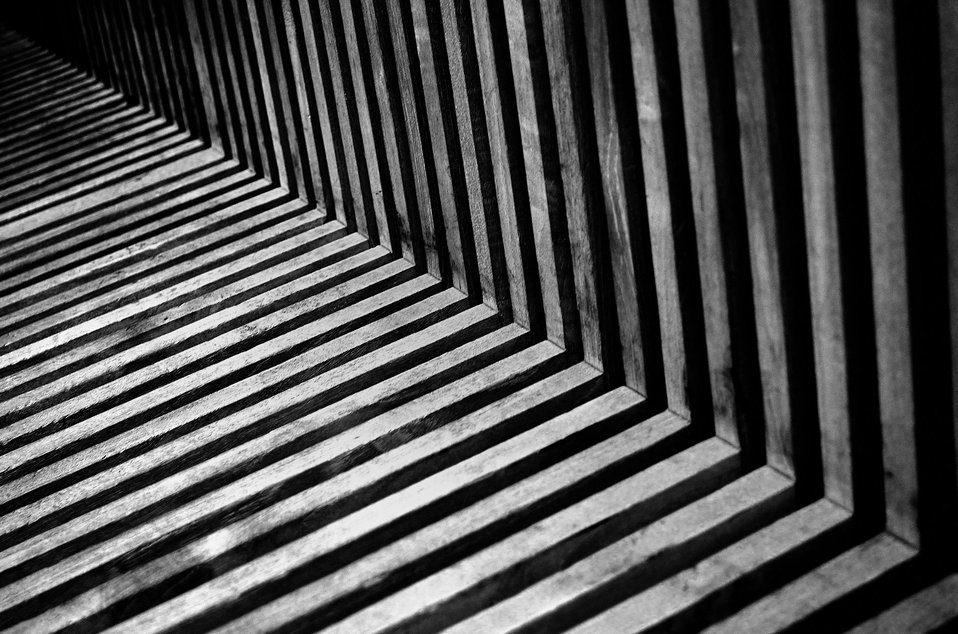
Wooden boards.